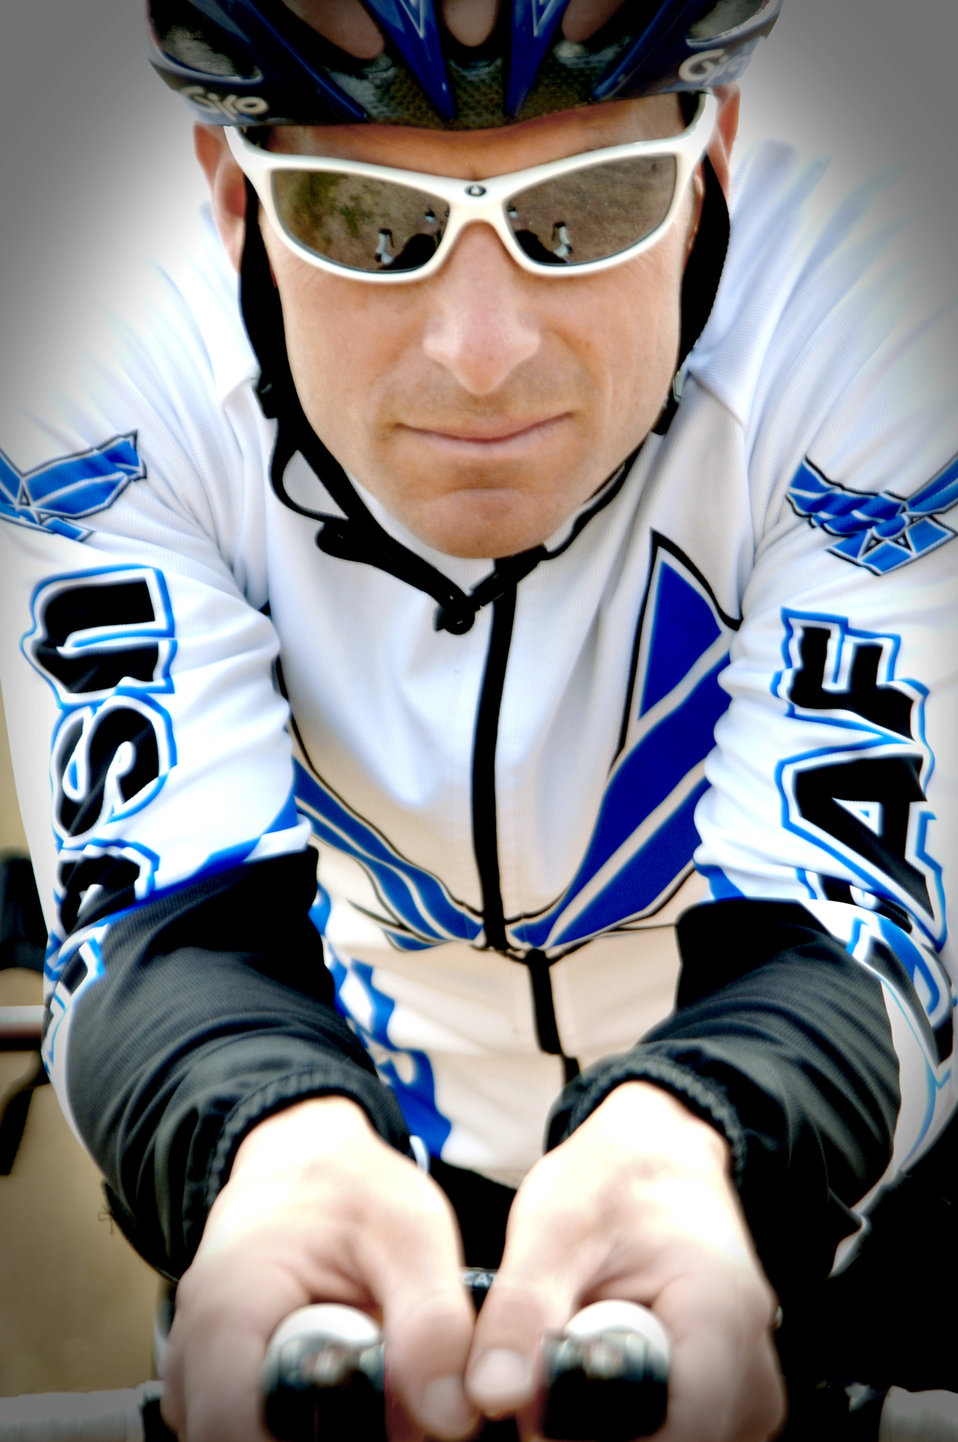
Academy officer picked for top triathlon

Maj. Scott Poteet, the adviser for Air Force Academy Cadet Squadron 02, trains for the 2010 Ironman Triathlon Oct. 4, 2010 at the Academy. Poteet's regimen includes more than three hours of training per day biking, swimming and running. The Ironman Triathlon takes place Oct. 9 in Kona, Hawaii.